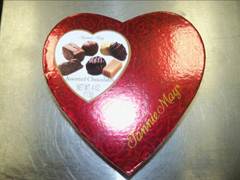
RECALLED – Assorted chocolates

February 20, 2014 – Fannie May Issues A Voluntary Recall Of Its 4.0 Oz. Heart-shaped Box Of Assorted Chocolates Due To Undeclared Peanuts.